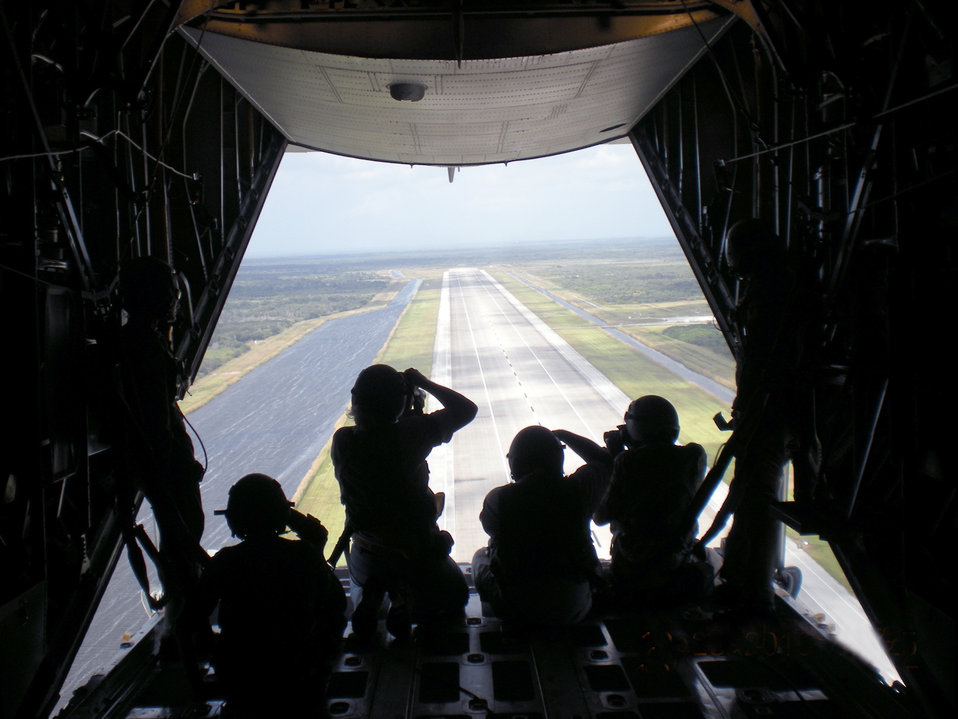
A look behind, beyond the gates

Twenty five members of the media from central Florida and Georgia attended media day, Oct. 25, 2010, to help gain momentum for Air Force Week in Central Florida, which runs through Halloween. Members of the Air Force Reserve's 920th Rescue Wing from Patrick Air Force Base, Fla., flew members of the media around Cape Canaveral Air Force Station and its neighbor, Kennedy Space Center in two HH-60G Pave Hawks and an HC-130 P/N King.